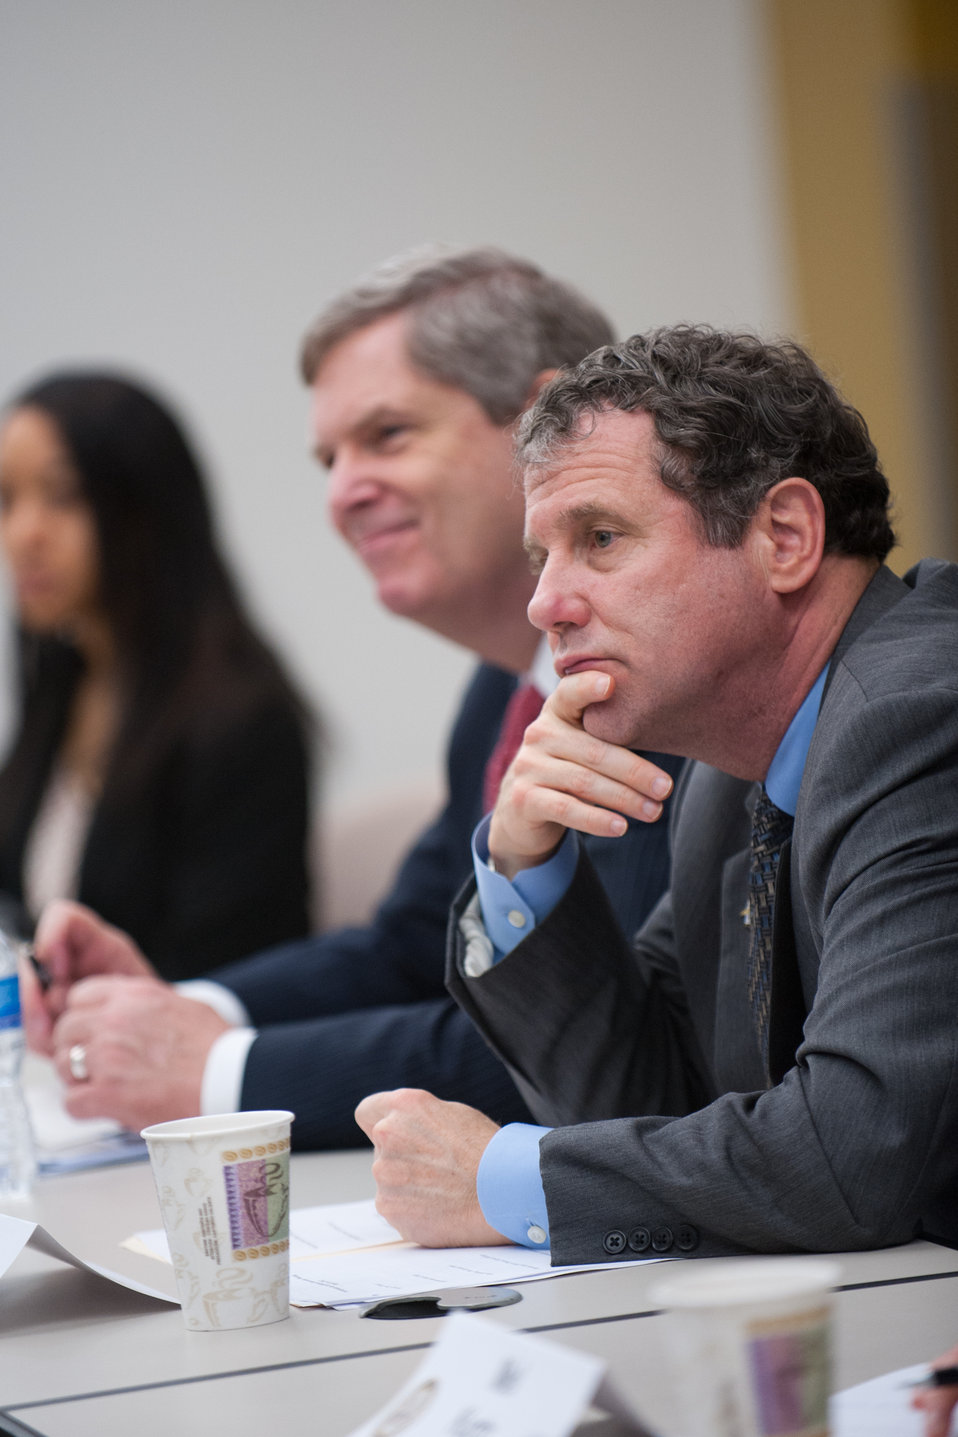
Agriculture Secretary Tom Vilsack (left) and Senator Sherrod Brown (OH) hold a roundtable discussion on economic innovation in Cleveland, Ohio on March 16, 2012 on a visit to Ohio and Michigan.